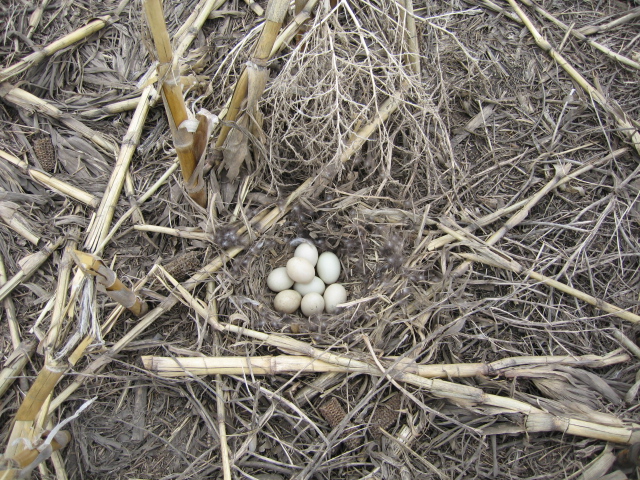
WPA Wildlife

Duck Nest